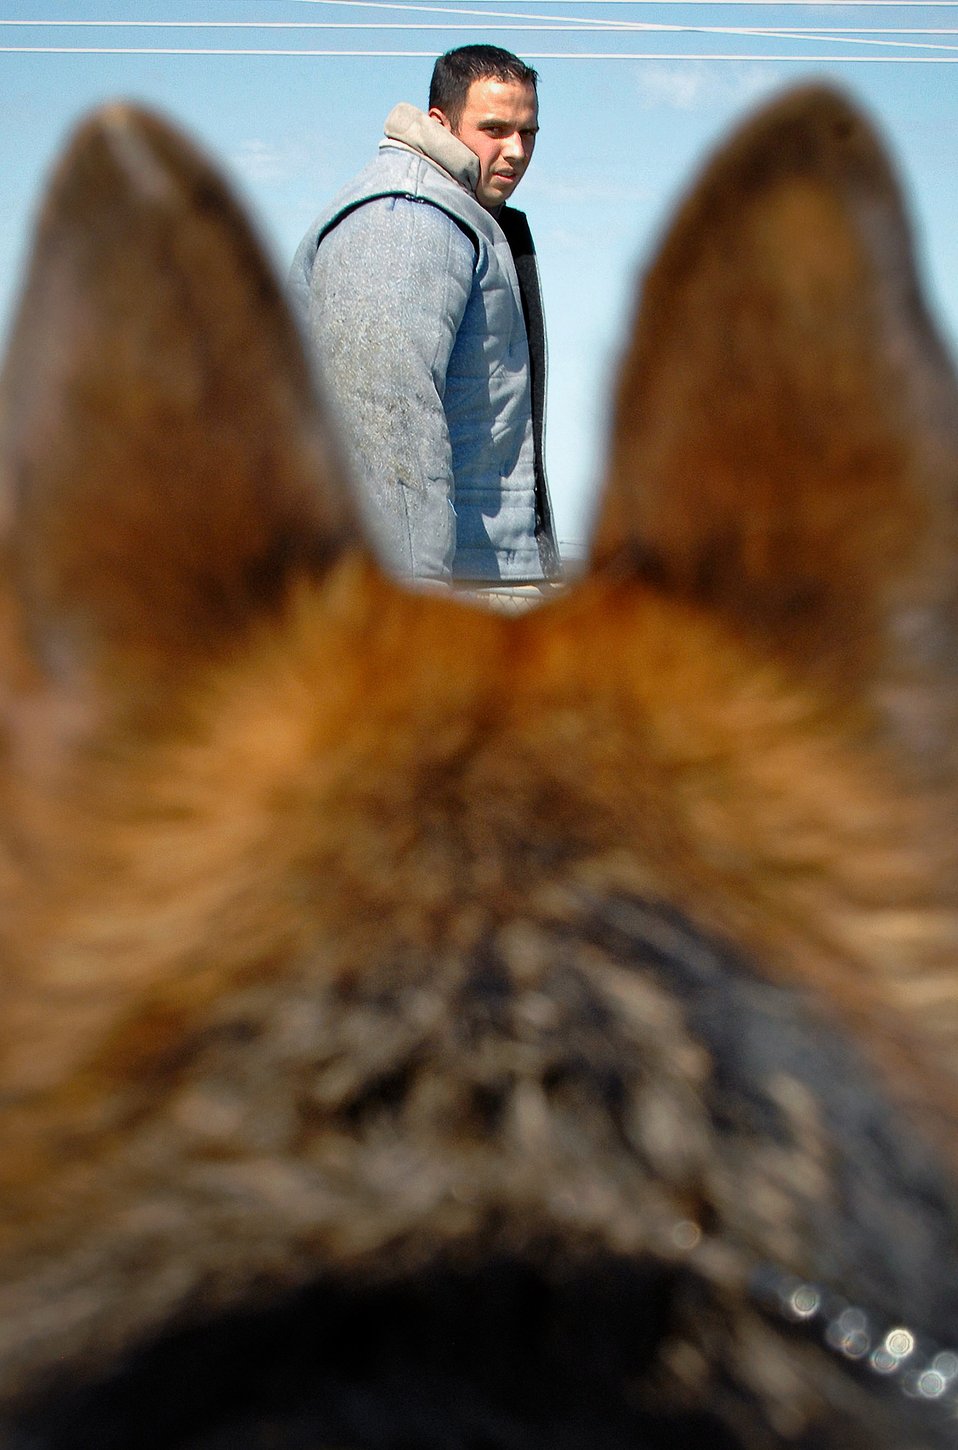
Poised for attack

Rudy, a military working dog, waits for the command to intercept Senior Airman Nathaniel Johnson during controlled aggression training Aug. 13 at Ellsworth Air Force Base, S.D. Airman Johnson is assigned to the 28th Security Forces Squadron.